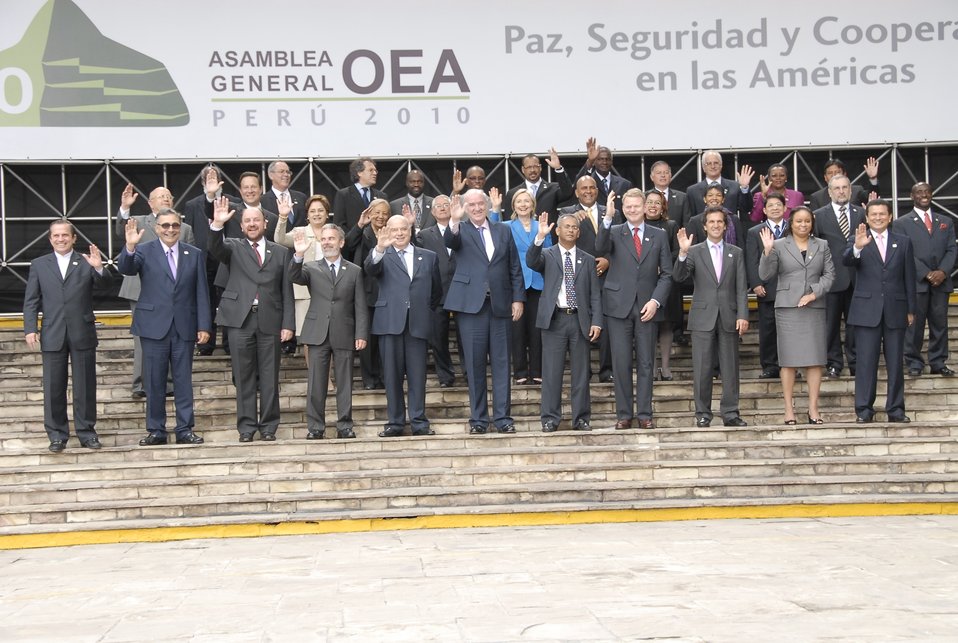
Secretary Clinton With OAS Ministers

U.S. Secretary of State Hillary Rodham Clinton poses for a photo with other ministers at the 40th General Assembly of the Organization of American States in Lima, Peru, on June 7, 2010.